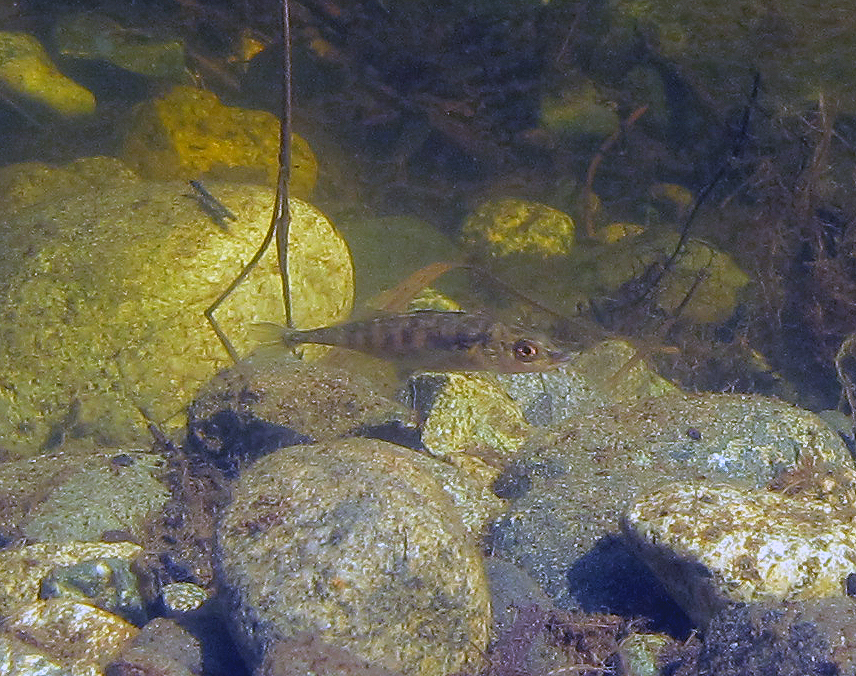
Caswell Lake 3 spine stickleback